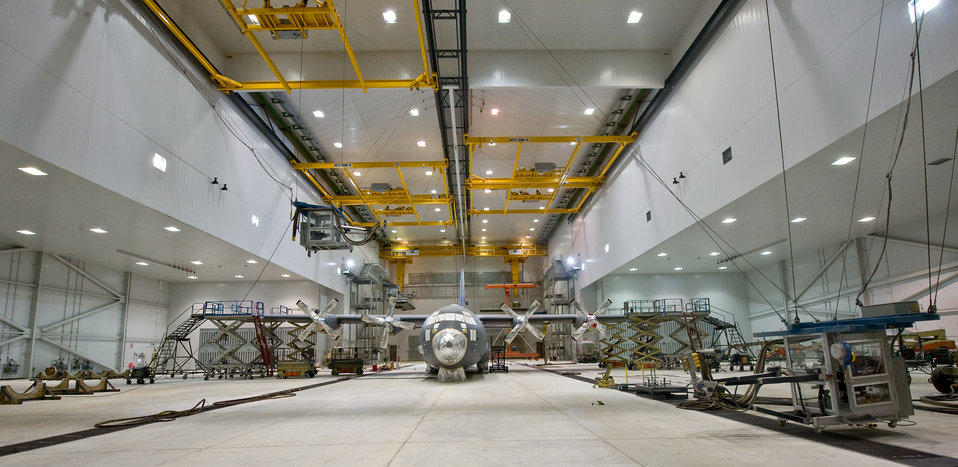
Depaint the big easy way

A North Carolina Air National Guard C-130 Hercules waits for depaint operations to begin at the 402nd Maintenance Support Squadron at Robins Air Force Base, Ga., Oct. 8, 2009. The four Area Multi-axis Platforms, or AMP, can be seen suspended from overhead rails. An operator controls the three-dimensional movement of the AMP and uses a set of four laser-aimed-nozzles that shoot compressed air and media at painted surfaces. The process breaks up the paint and reveals the bare surface underneath it. This environmentally friendly system presents a low hazard to the operators and the environment, while making the depaint process faster.